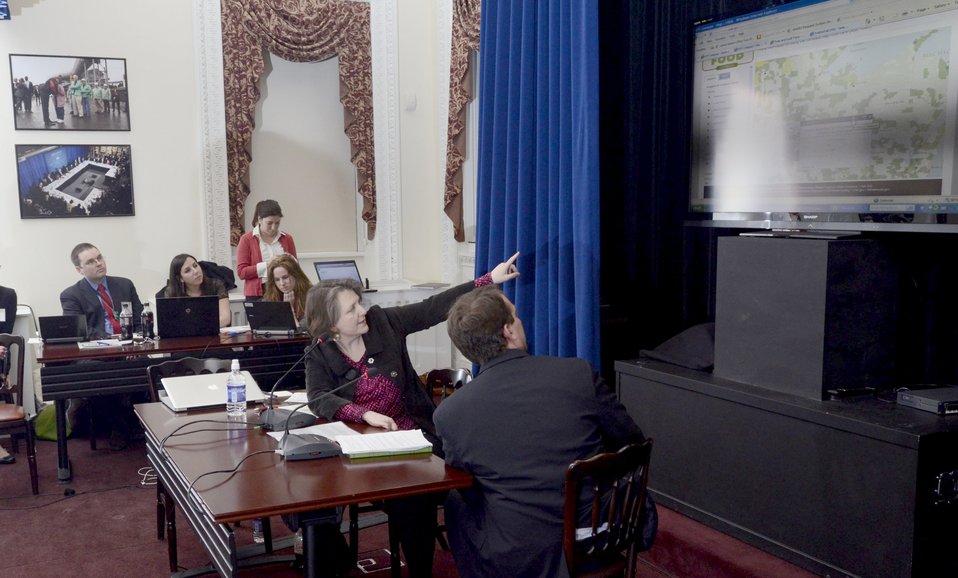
Agriculture Deputy Secretary Kathleen Merrigan and Director, White House Office of Public Engagement Jon Carson, during a Know Your Farmer Compass event that used twitter social media to continue the National Conversation on Local and Regional Food projects and how they offer economic opportunities to local farmers, ranchers and food entrepreneurs. The virtual conversation took place from the White House, in Washington, D.C., on Monday, March 5, 2012.